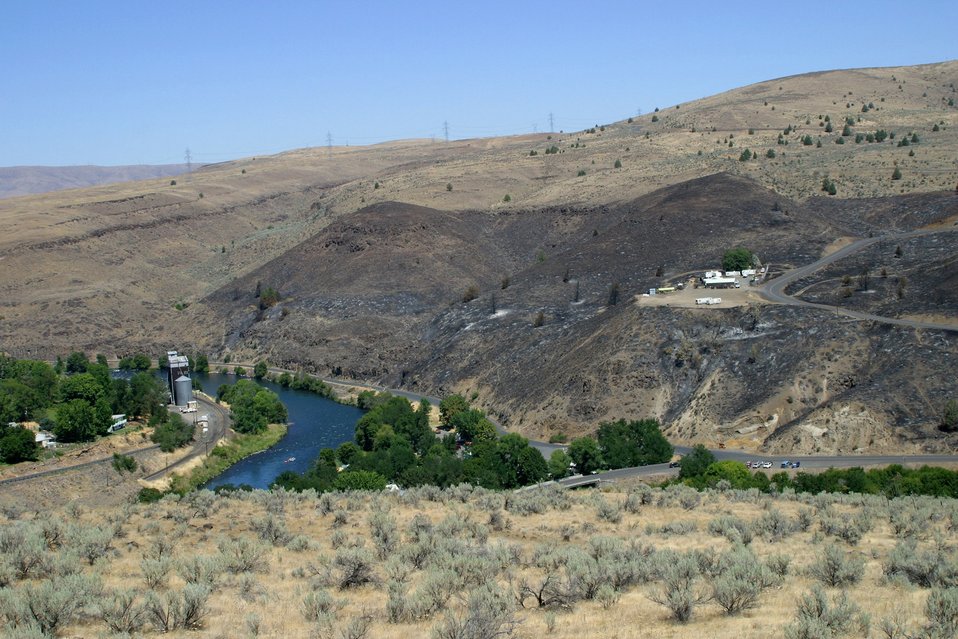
View of a fire east of Maupin with the BLM maintenance compound.